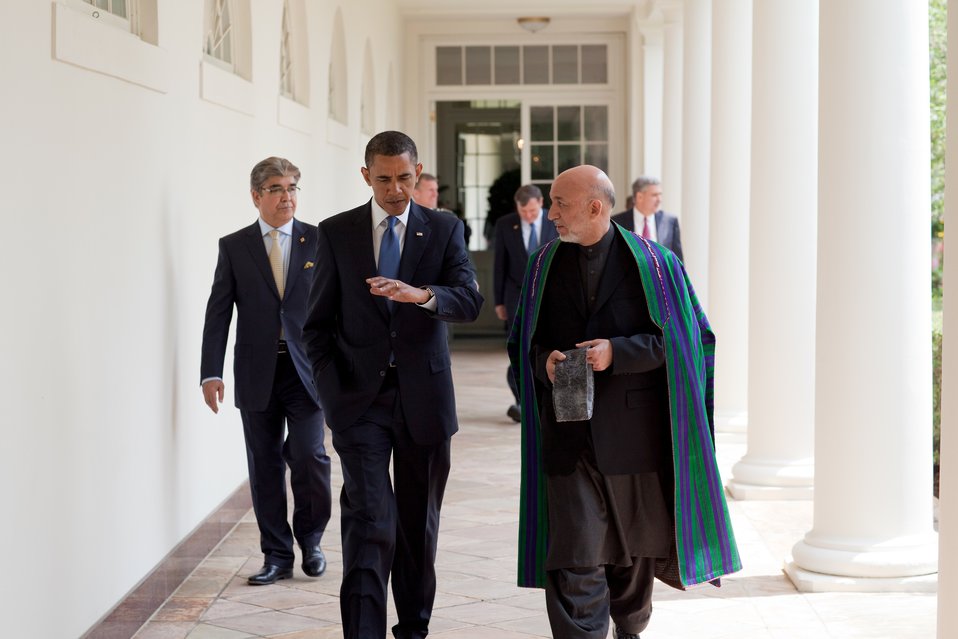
President Obama and Afghan President Karzai Walk Along Colonnade

President Barack Obama and President Hamid Karzai of Afghanistan walk along the Colonnade of the White House, following their joint press conference in the East Room of the White House in Washington, D.C., May 12, 2010.